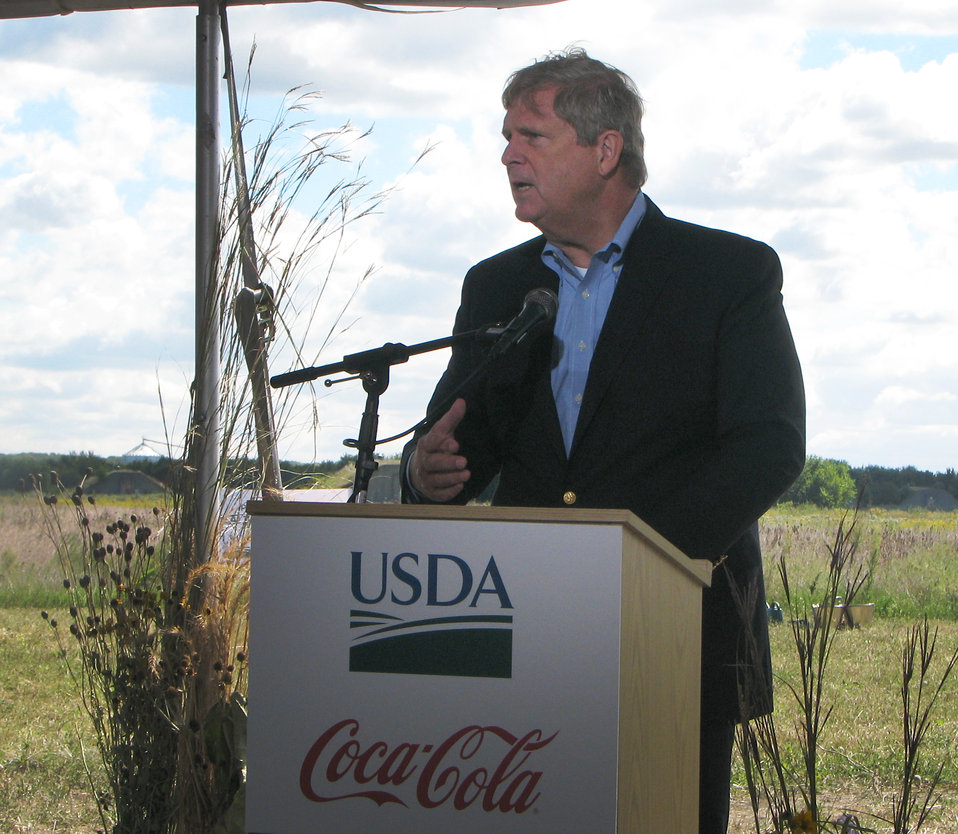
Agriculture Secretary Tom Vilsack speaks at a public-private partnership event announcing a project to restore and protect damaged watersheds on national lands at the Midewin Tallgrass Prairie in Illinois on Friday, Sep. 13, 2013. The goal of this partnership is to return more than a billion liters of water to the National Forest System that provides drinking water to more than 60 million Americans.